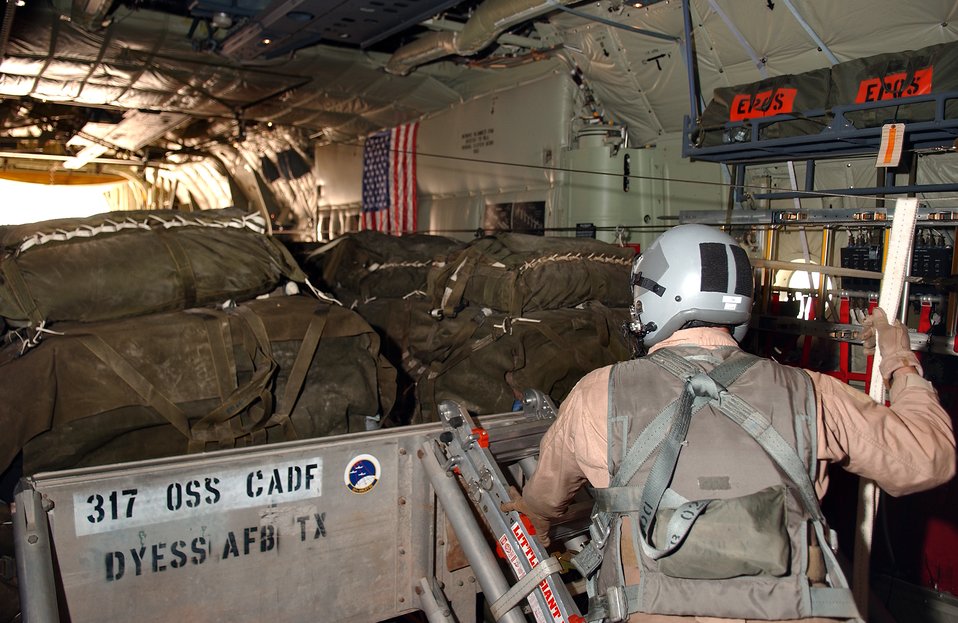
C-130J conducts first-ever combat airdrop

SOUTHWEST ASIA -- Master Sgt. Sean Ballard watches as a container delivery system bundle rolls out of the back of a C-130J Hercules June 30. This mission was the first-ever combat airdrop for the new J-model transport. Sergeant Ballard is a loadmaster with the Rhode Island Air National Guard's 143rd Air Wing.